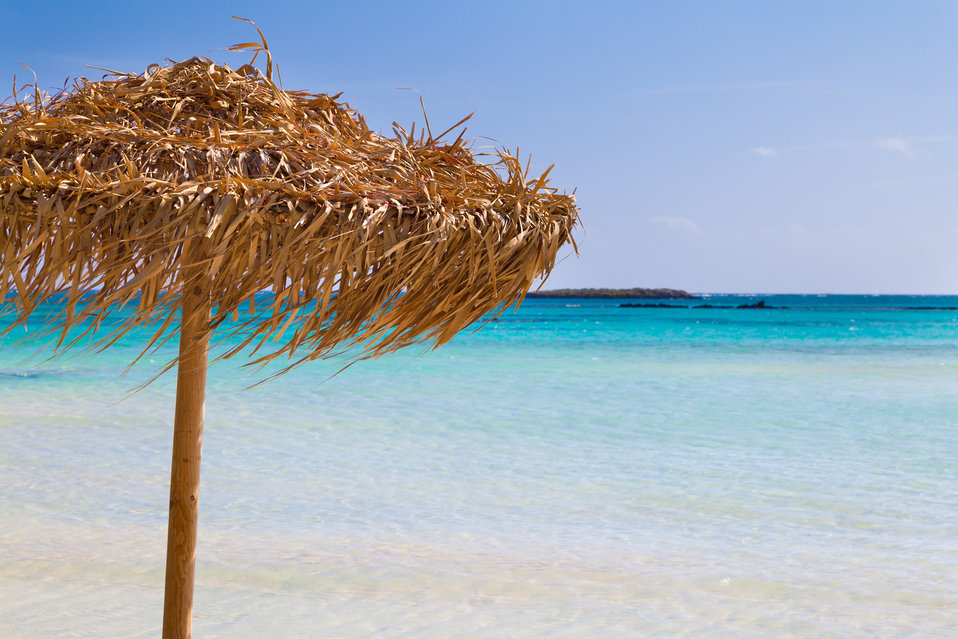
Parasol on the beach

Beautiful lagoon in crete.